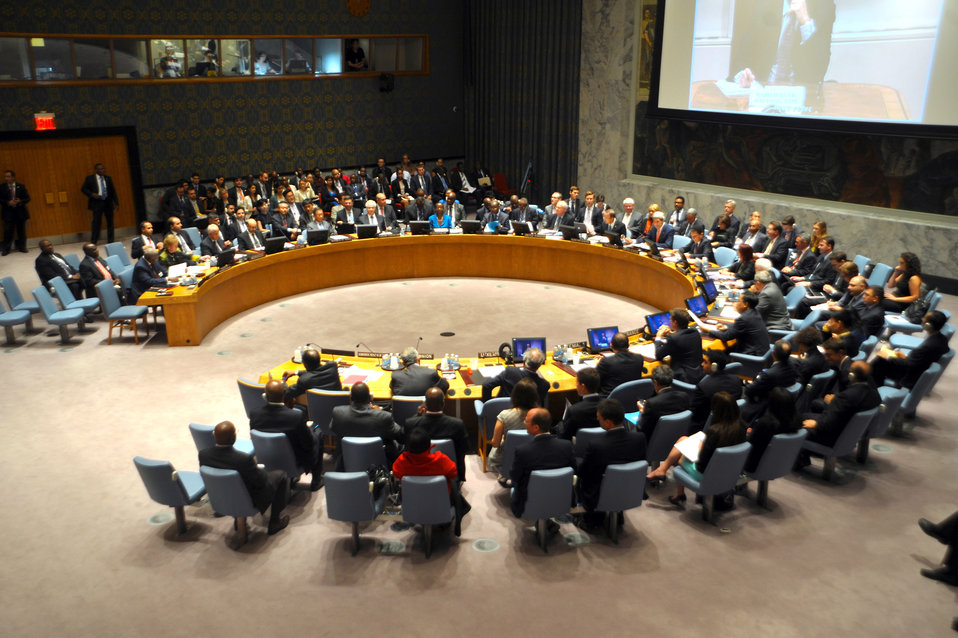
Secretary Kerry Kicks Off a Discussion of Africa's Great Lakes Region

U.S. Secretary of State John Kerry kicks off a discussion of Africa's Great Lakes region by the United Nations Security Council in New York City on July 25, 2013.